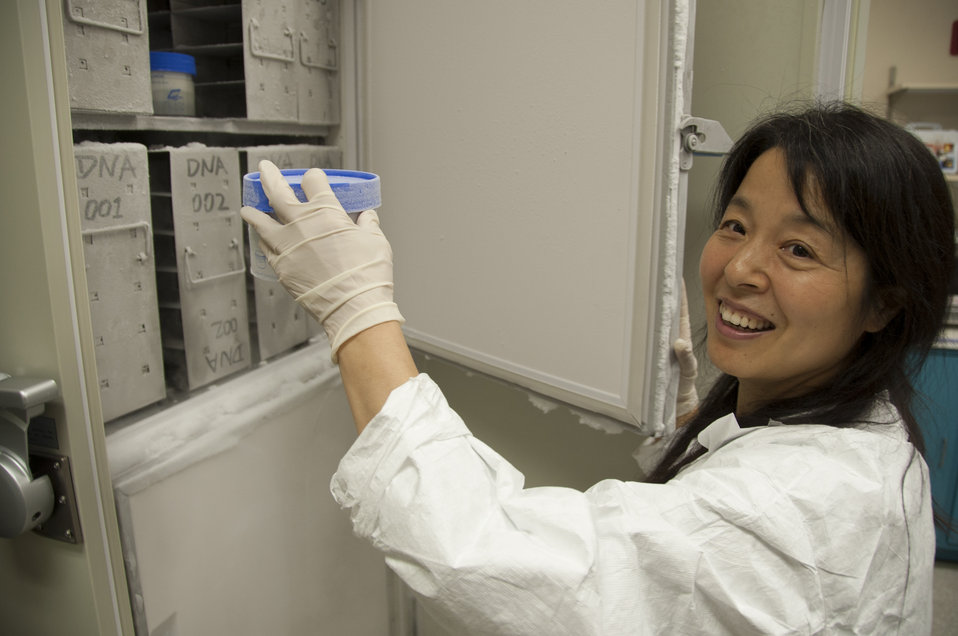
Blood Research: Saving Lives (8439)

Meihong Liu, Ph.D. working at FDA’s Office of Blood Research and Review, places blood specimens in a freezer for long-term storage. FDA is responsible for the safety of our nation’s blood supply and is at the forefront of evaluating and encouraging innovative technologies for protecting it.

Read this Consumer Update to learn more: Advances in Saving Lives with Blood